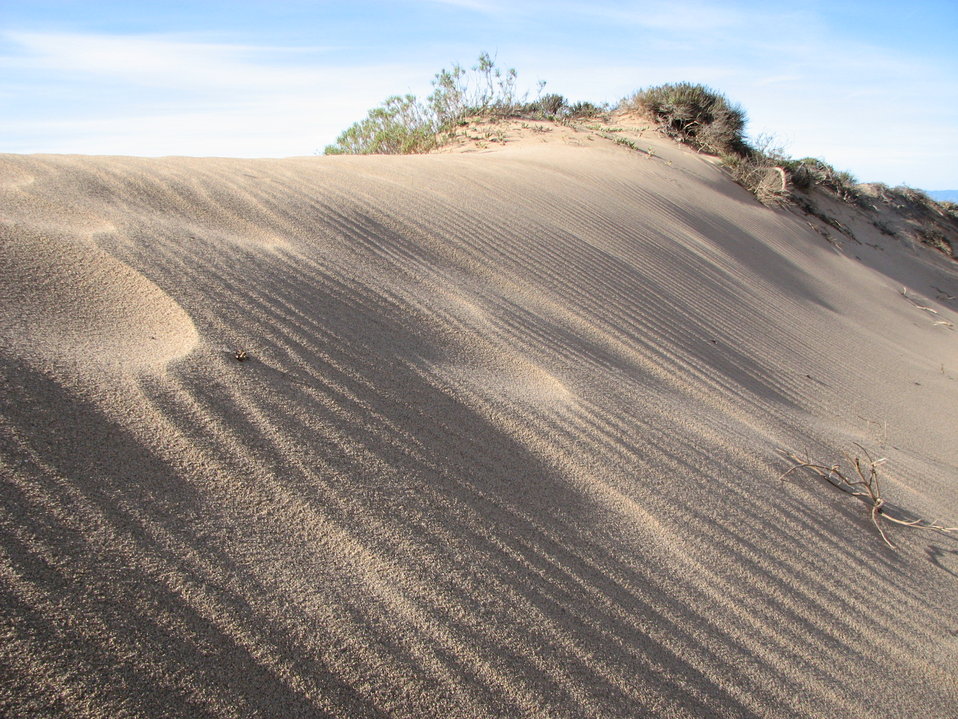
Paradise Beach

Mussel Rock and Paradise beaches 2009 winter plover survey.